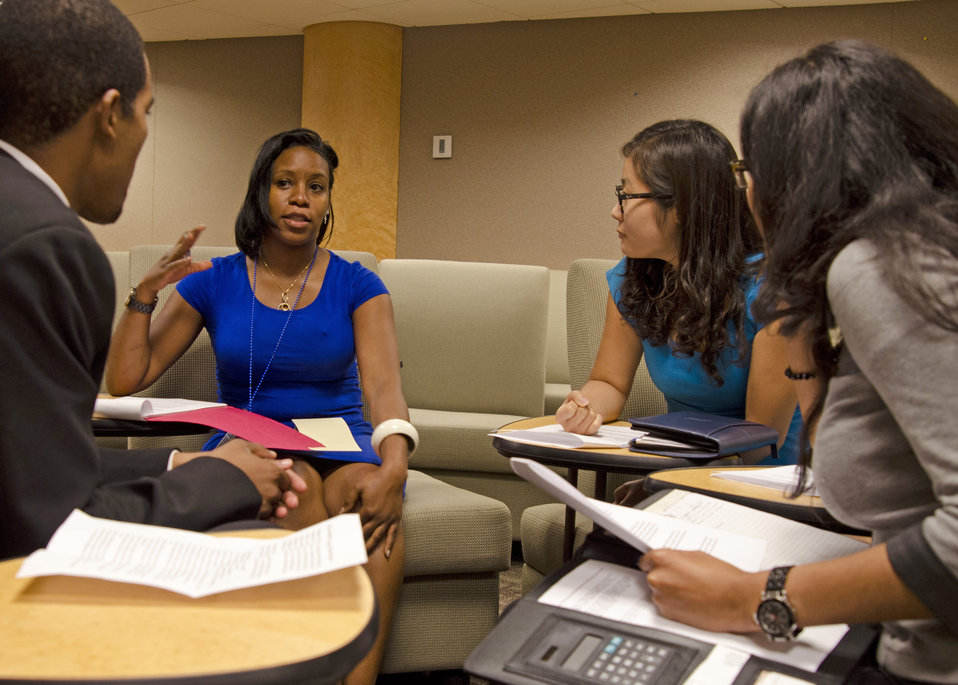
A group of interns discuss how they are going to make their group presentation at the U.S. Department of
Agriculture’s (USDA) Internship Program Listening Session held in USDA’s South Building in Washington, D.C. on Monday, August 7, 2012. The purpose of the USDA Internship Program Listening Session is to provide interns with a forum to express their views about their experiences as a USDA intern. These young people will be among the most promising future USDA leaders and participate in an individual discussion and group session that will develop leadership skills.